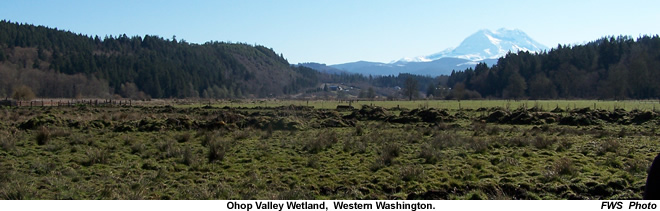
Ohop Valley wetland - Washington Fish and Wildlife Office